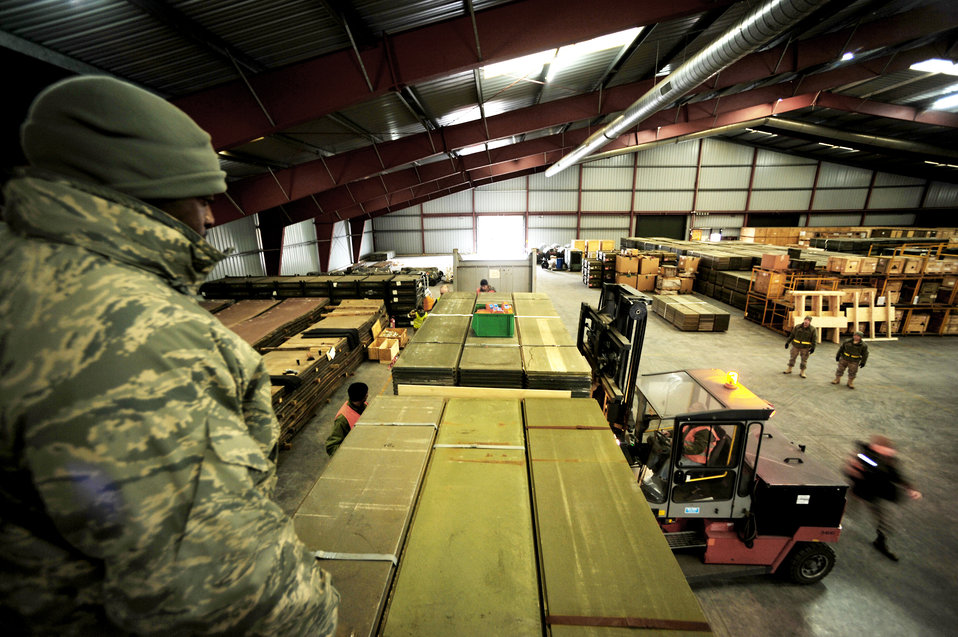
U.S., Luxembourg partnership support surge

Tech. Sgt. Stevenson Johnson and local members of the Warehouses Service Agency loads an AM-2 matt landing strip Feb. 22, 2010 at the Central Region Storage Facility, Sanem, District of Luxembourg, in support of ongoing war efforts. Sergeant Johnson is from the 86th Material Maintenance Squadron, Ramstein Air Base, Germany.